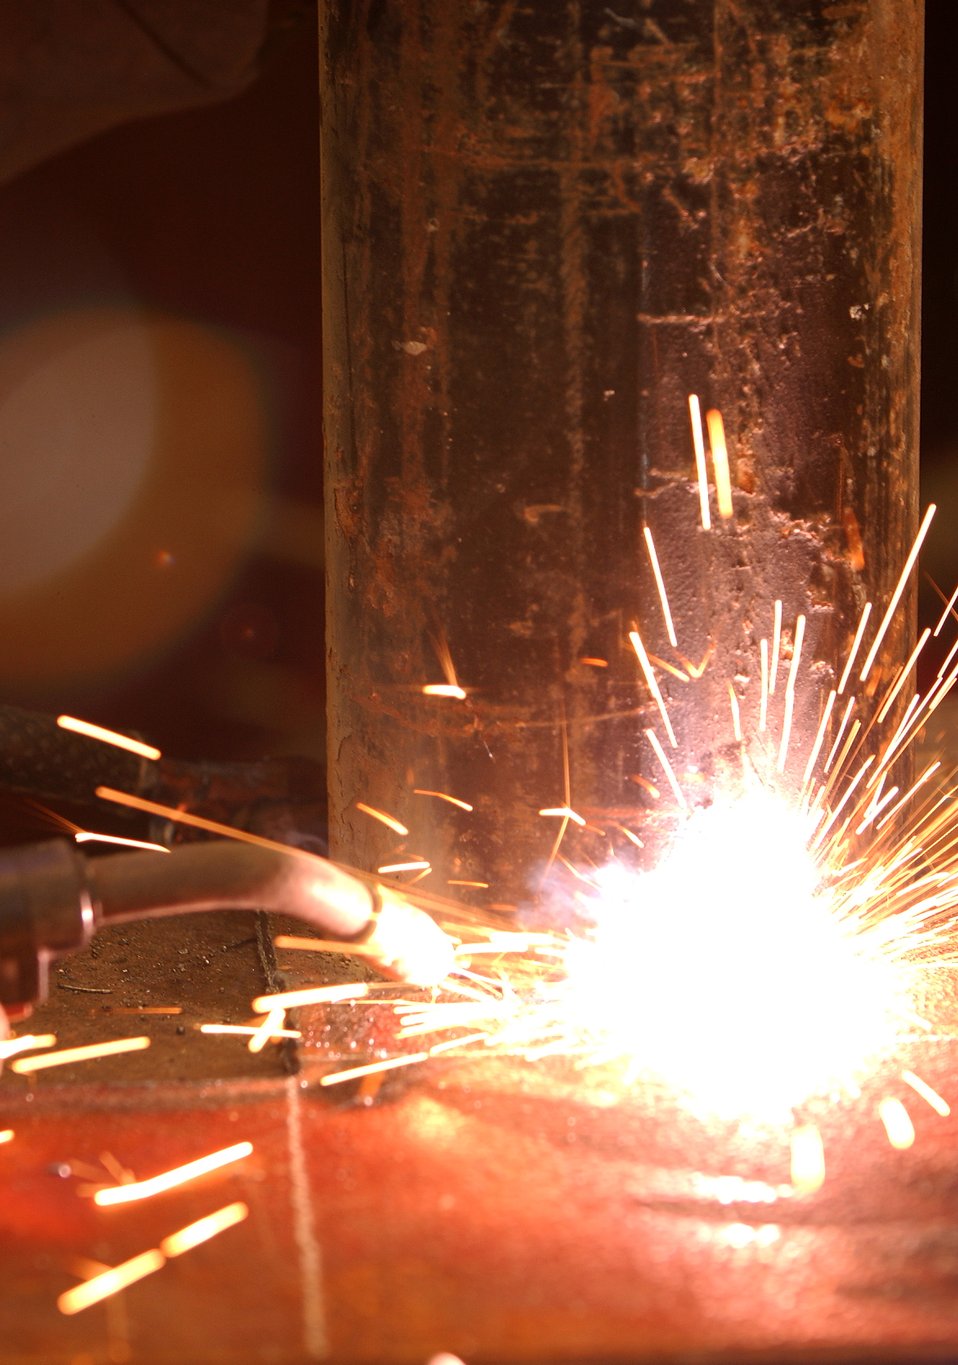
All fired up

SOUTHWEST ASIA -- Senior Airman Ralph Keener is one of several welders at a forward-deployed location providing vital support to Operation Iraqi Freedom. He is assigned to the 1st Expeditionary Red Horse Group.